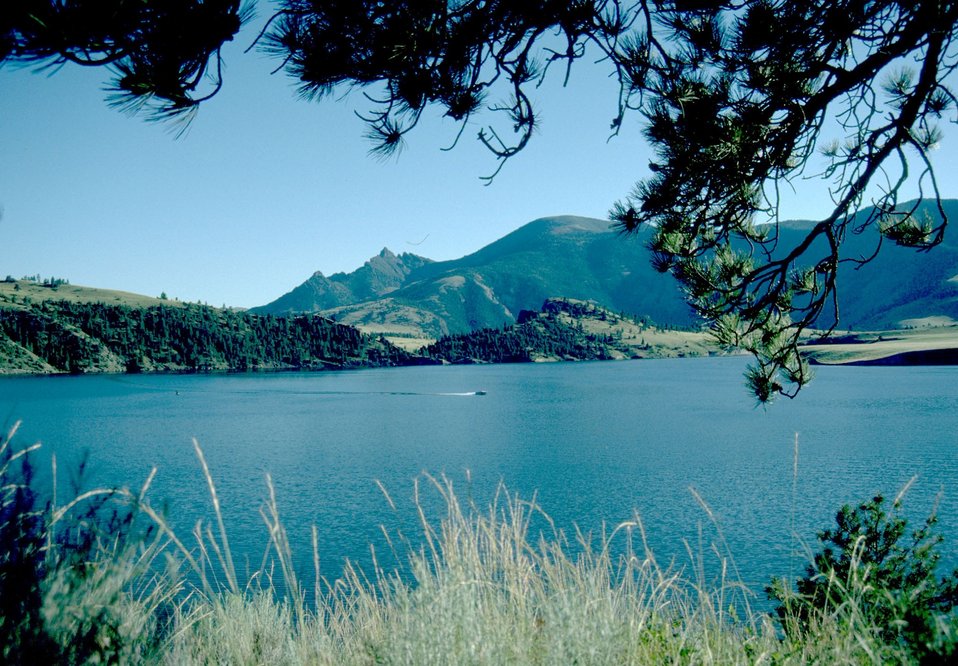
Sleeping Giant with Holter lake in foreground